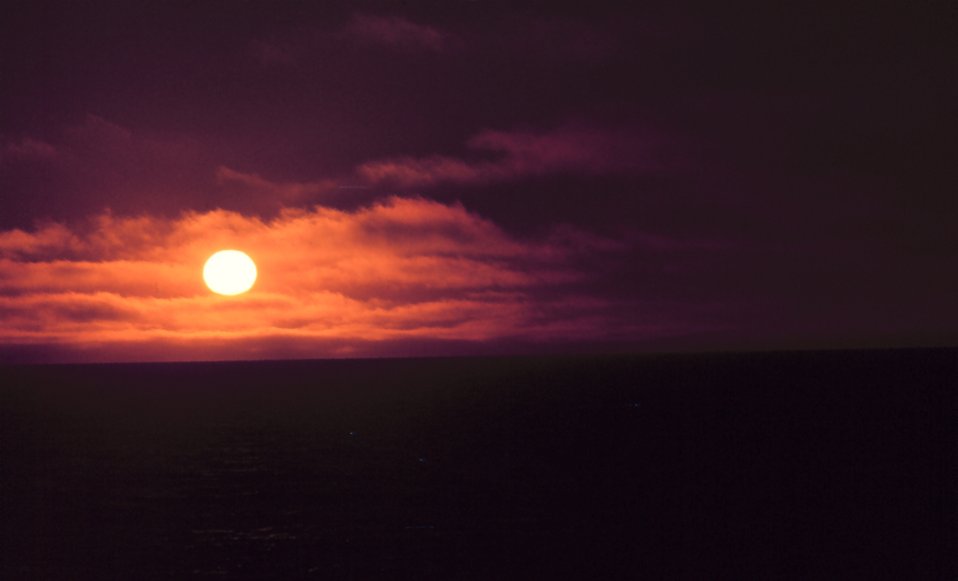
Alaskan sunset.